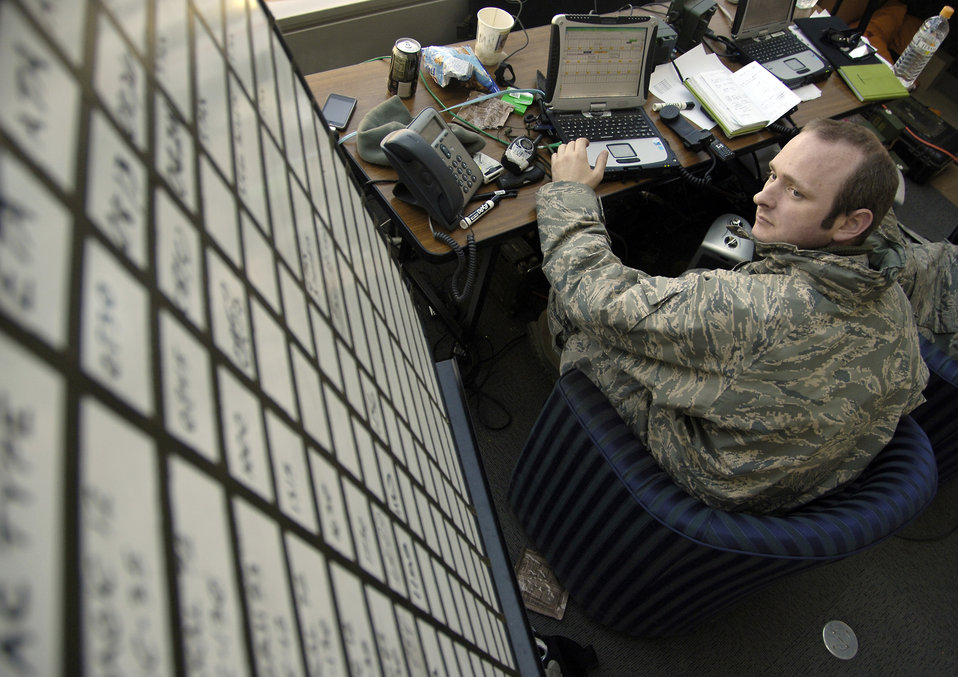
Recovering Hope

Staff Sgt. Chris Sefton reviews aircraft landing schedules March 29, 2011, at Sendai Airport, Japan. A team of 20 Airmen deployed there to help the Japanese recover and rebuild in the wake of the March 11 earthquake and tsunami. Sefton is a ground radio technician with the 320th Special Tactics Squadron, Kadena Air Base, Japan.